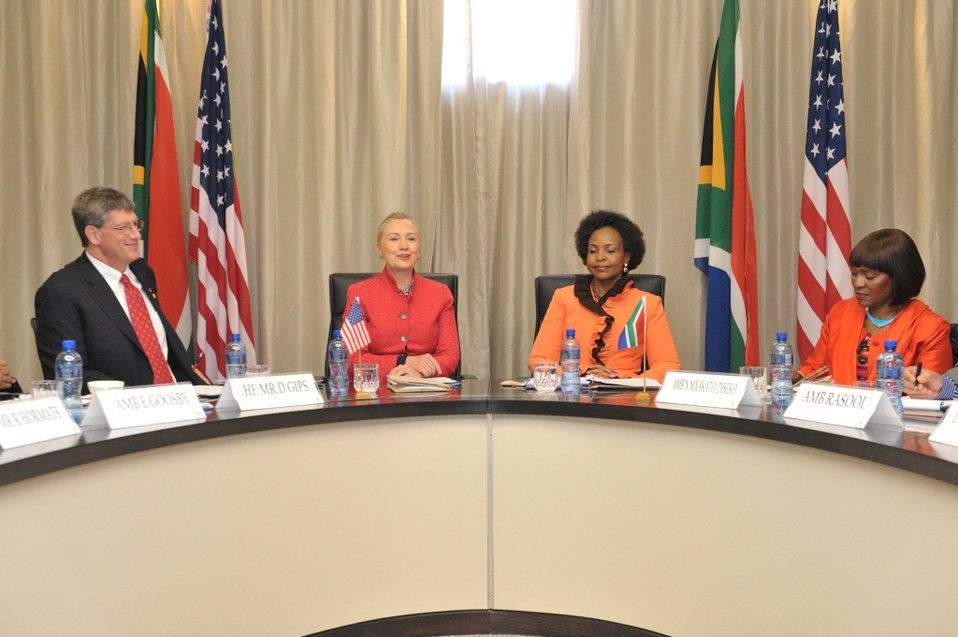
Secretary Clinton Meets With South African International Relations and Cooperation Minister Nkoana-Mashabane

U.S. Secretary of State Hillary Clinton meets with South African International Relations and Cooperation Minister Maite Nkoana-Mashabane for the second meeting of the South Africa-United States of America Strategic Dialogue in Johannesburg, South Africa, on August 7, 2012.